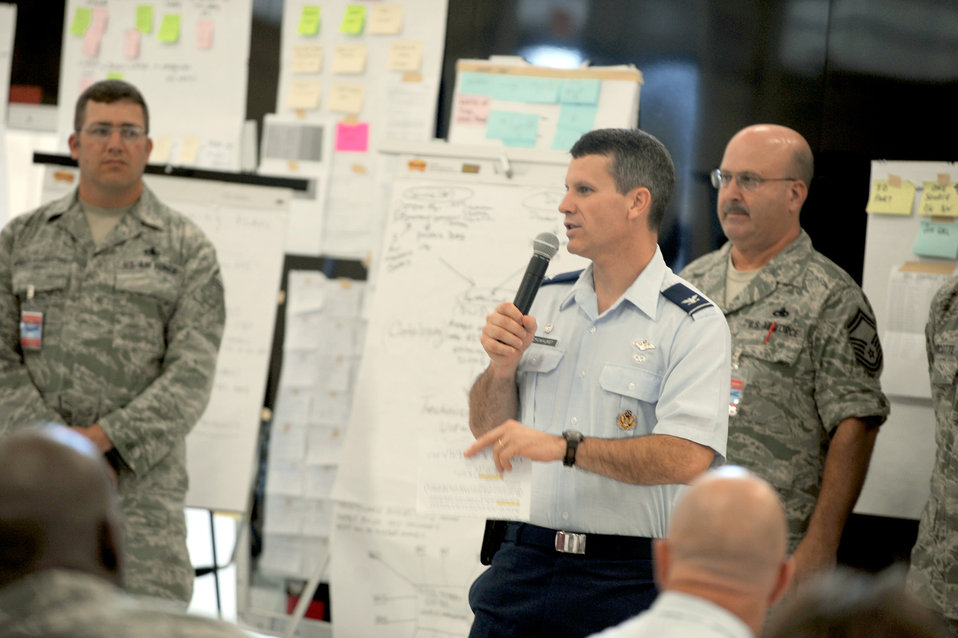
McConnell AFB officials host AFSO 21 event

Col. Jamie Crowhurst expresses his appreciation to Airmen for their contributions during an Air Force Smart Operations for the 21st Century outbrief Sept. 17, 2010, at McConnell Air Force Base, Kan. Air Force officials held the AFSO 21 event to further streamline and sustain the KC-135 Stratotanker fleet Sept. 13 through 17. Colonel Crowhurst is the 22nd Air Refueling Wing commander.